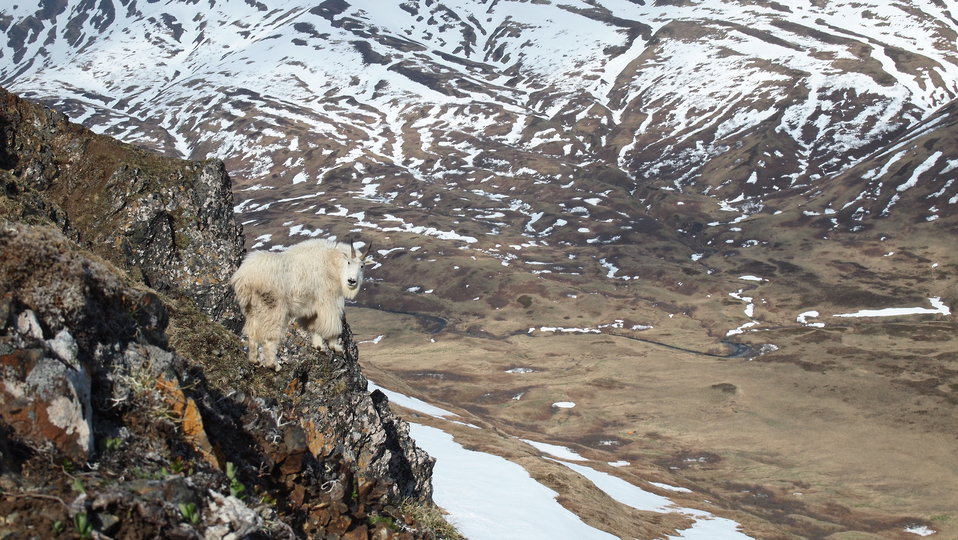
Mountain Goat

This mountain goat is perched high above on the Hepburn Peninsula.

Contact: Lisa Hupp@fws.gov

Source: Kodiak NWR